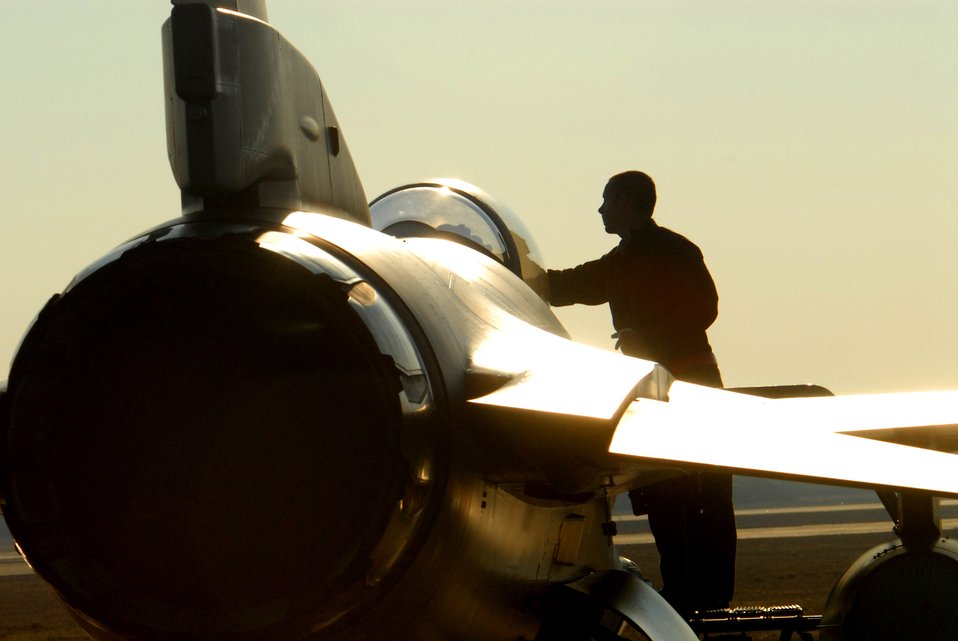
Iron Thunder roars through Shaw

Staff Sgt. Donald Slayton cleans the canopy of an F-16 Fighting Falcon prior to launch during Exercise Iron Thunder Feb. 7, at Shaw Air Force Base, S.C. The objective of the exercise is to prepare units for future contingency operations by offering a chance for players to be exposed to missions identical to those faced in combat. Sergeant Slayton is a 77th Fighter Squadron crew chief.